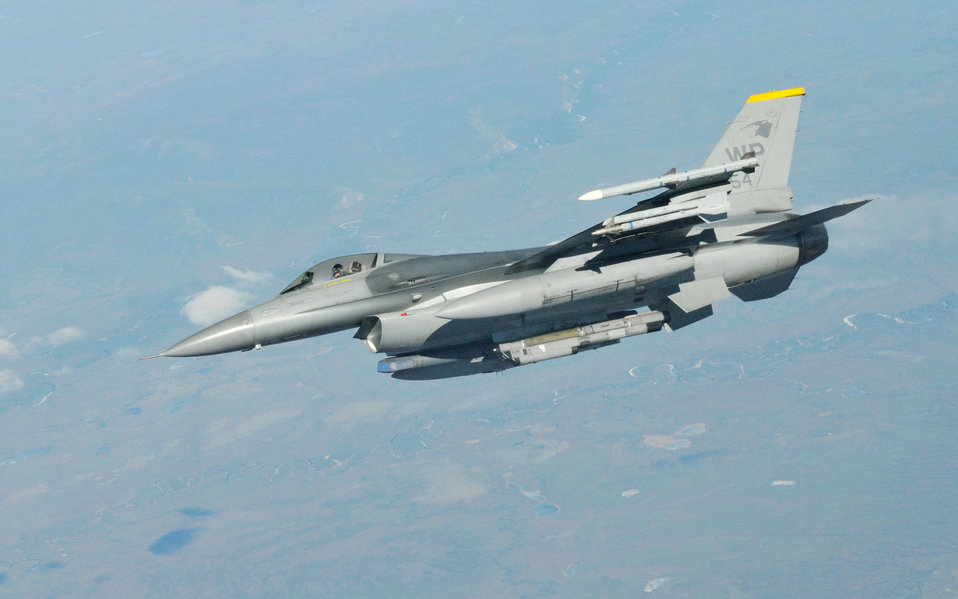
F-16s participate in Red Flag-Alaska

An F-16 Fighting Falcon pilot moves into position as he waits for the rest of his four-ship formation to refuel as they participate in Red Flag-Alaska April 27, 2010.